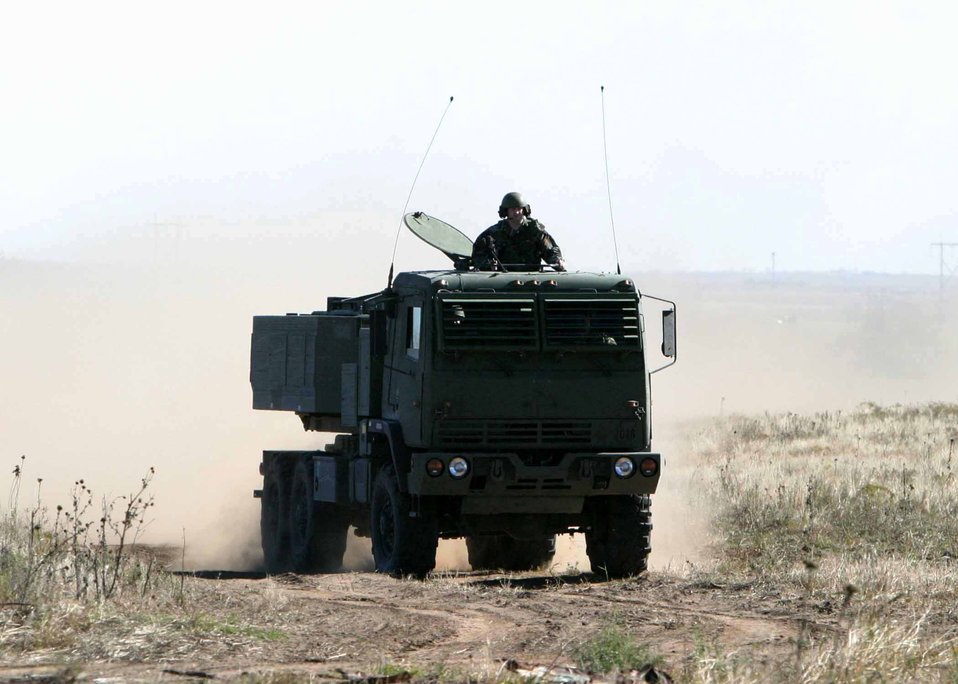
Fast fire

FORT SILL, Okla. -- A High Mobility Artillery Rocket System moves to the Battery Operations Center area after successfully firing a volley of six reduced range practice rounds here Nov. 19. The firing completed an evaluation of the system that began at Redstone Arsenal, Huntsville in Ala., and ended here. The HIMARS is on track to be fielded to the first Army units in March 2005.